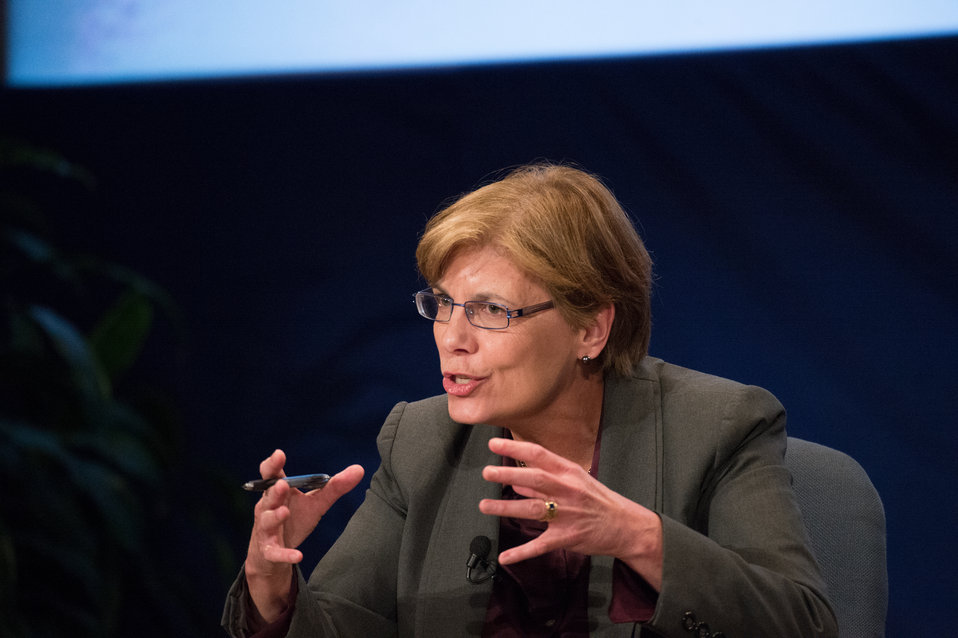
United States Agency for International Development (USAID) Feed the Future Chief Scientist Julie Howard answers a question from a student guest at the Borlaug Symposium commemorating the late Dr. Norman E. Borlaug's 100th Birthday hosted by the U.S. Department of Agriculture (USDA) in the Jefferson Auditorium of the USDA in Washington, D.C., on Tuesday, Mar. 25, 2014. The symposium will highlight current efforts addressing global hunger. The symposium panels will feature high school and university students, as well as, scientists and policy advisors at USAID, USDA and Non-Governmental Organizations (NGO). Questions from students and interns are given priority to panelists. Lightening presentations will have leading students and individuals present what they are doing to help achieve Dr. Borlaug’s vision of creating the next generation of hunger fighters.
The symposium was planned in partnership with:USAID, Cornell University, Iowa State University, University of Minnesota, The Norman Borlaug Institute for International Agriculture, Texas A and M University, and the World Food Prize.